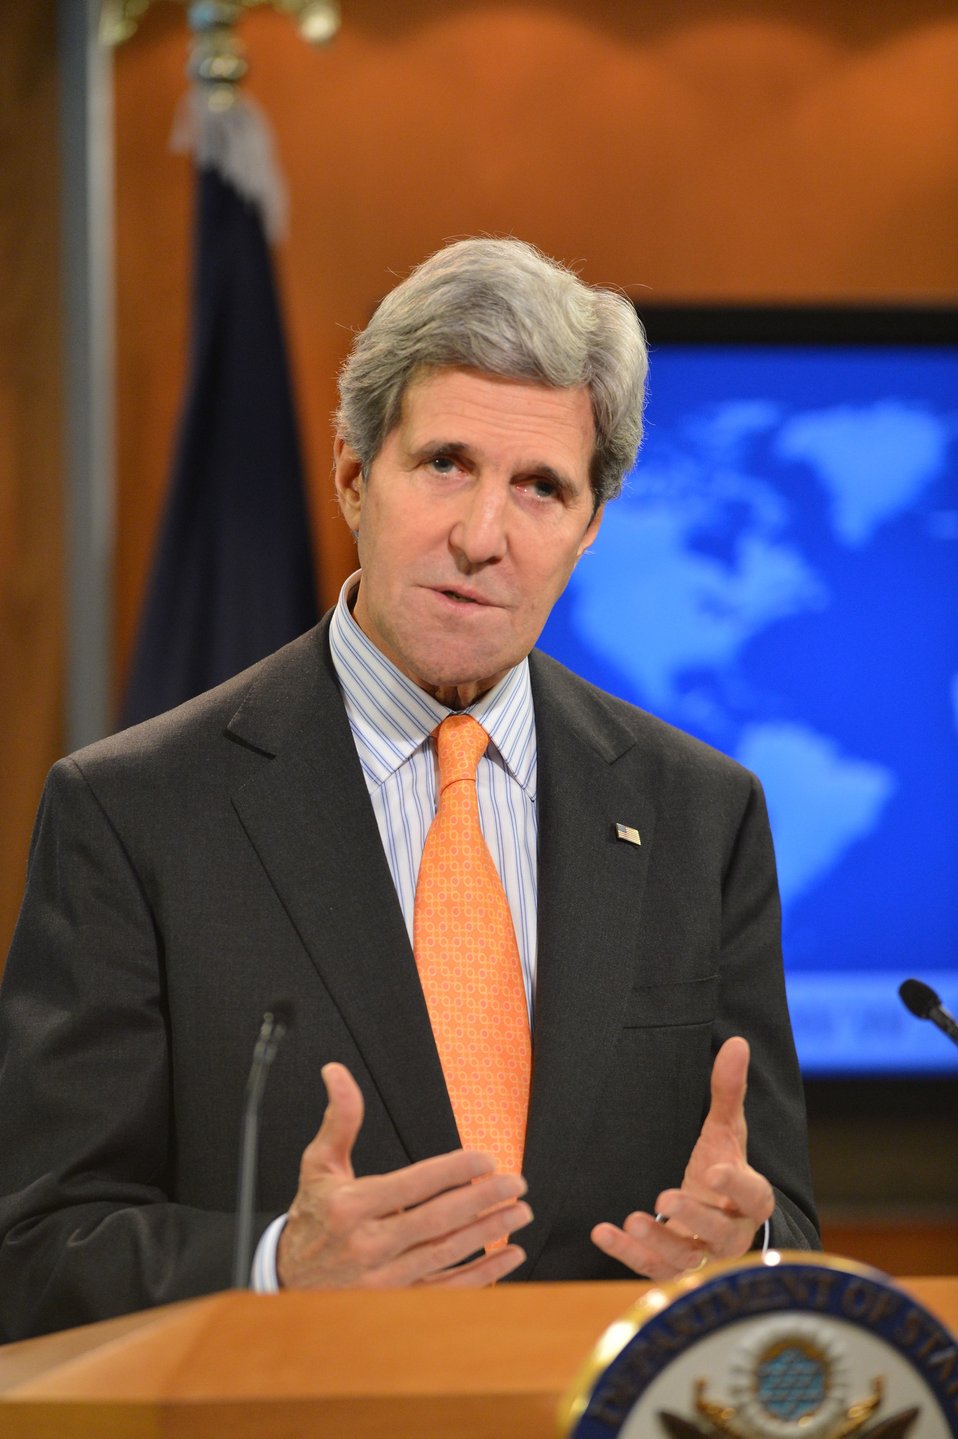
Secretary Kerry Delivers a Message on Syria

U.S. Secretary of State John Kerry delivers message on Syria at the top of the Daily Press Briefing at the U.S. Department of State in Washington, D.C., on January 16, 2013.